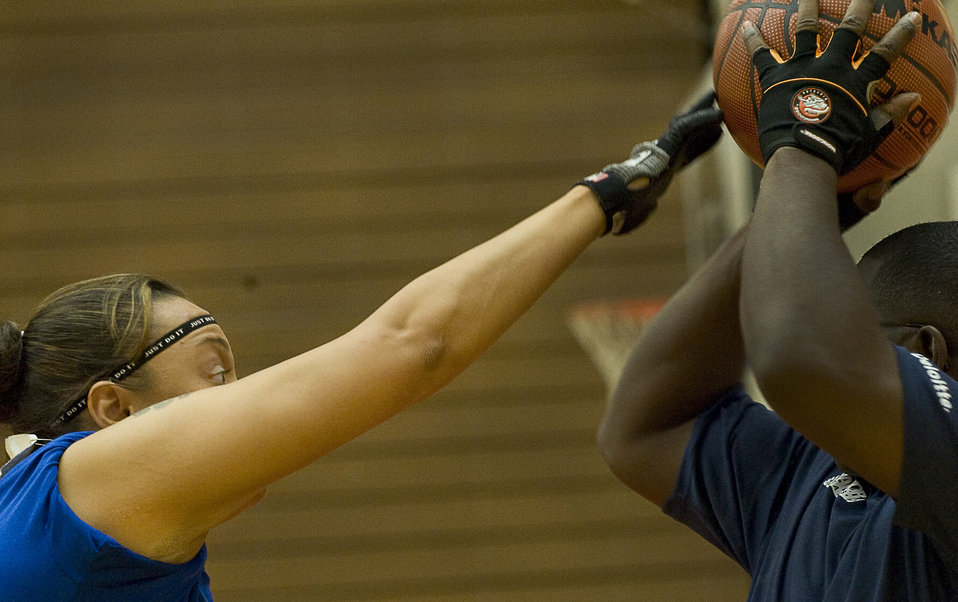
AF Basketball

A Navy basketball player looks for an open teammate during the Warrior Games bronze medal match against the Air Force May 12, 2010 at the Olympic Training Center, Colorado Springs. The Air Force went on to win the game 13-10. The Warrior Games competition began May 10 and finishes on May 14, 2010 at the U.S. Olympic Training Center in Colorado Springs.